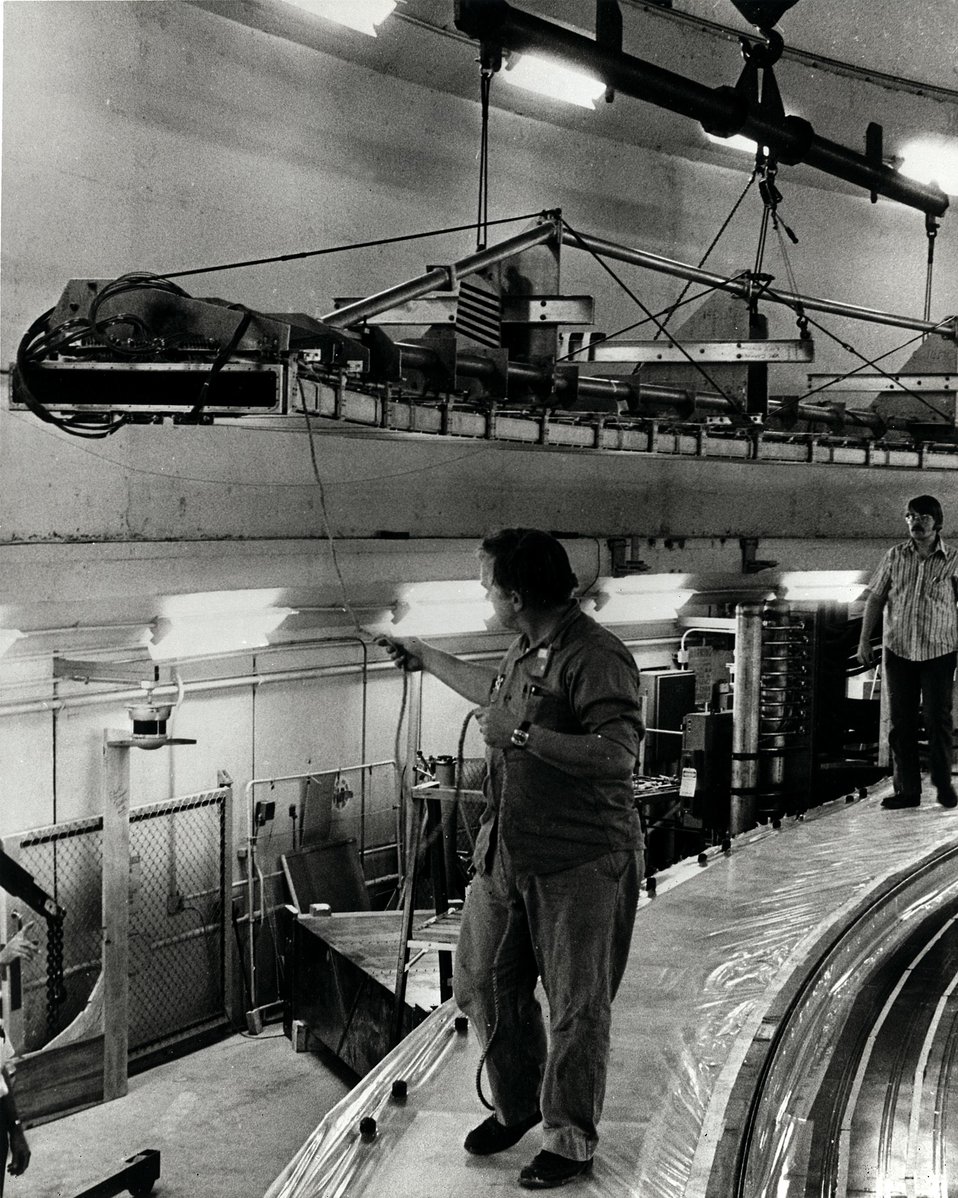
A new diffusion bonded titanium vacuum chamber is installed in the AEC's Zero Gradient Synchrotron (ZGS), Argonne National Laboratory's 12 1/2 GeV Proton Accelerator.
c.1973